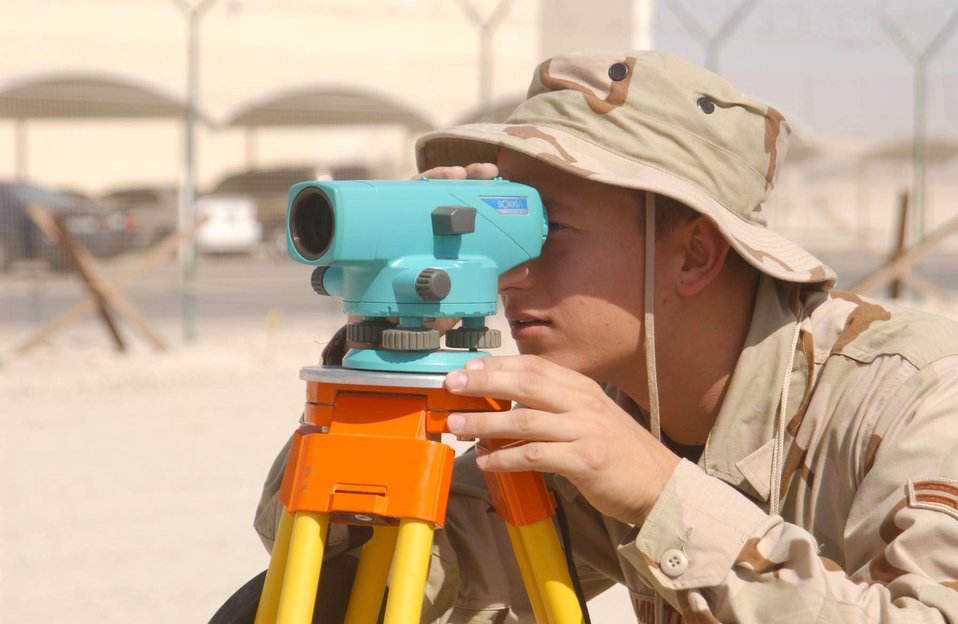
Shootin' the grade

SOUTHWEST ASIA -- Airman 1st Class Shawn Hamilton uses an auto level to